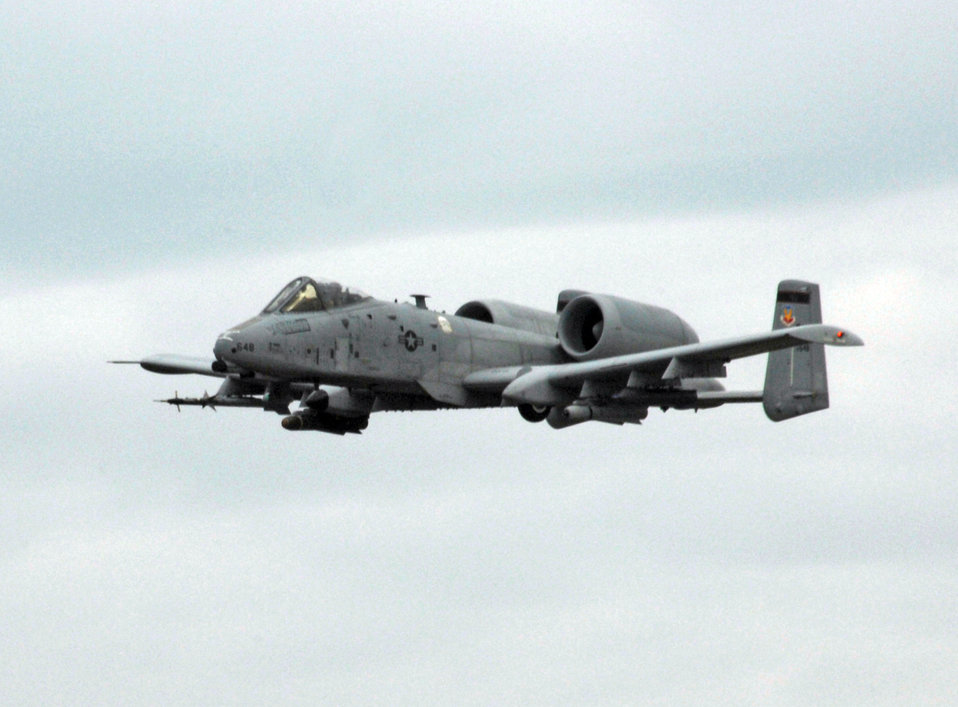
A-10C accident report

According to Air Force officials, human error was the cause of an A-10C Thunderbolt II accident that took place May 10, 2010, at Moody Air Force Base, Ga. The aircraft was assigned to the 75th Fighter Squadron at Moody AFB.